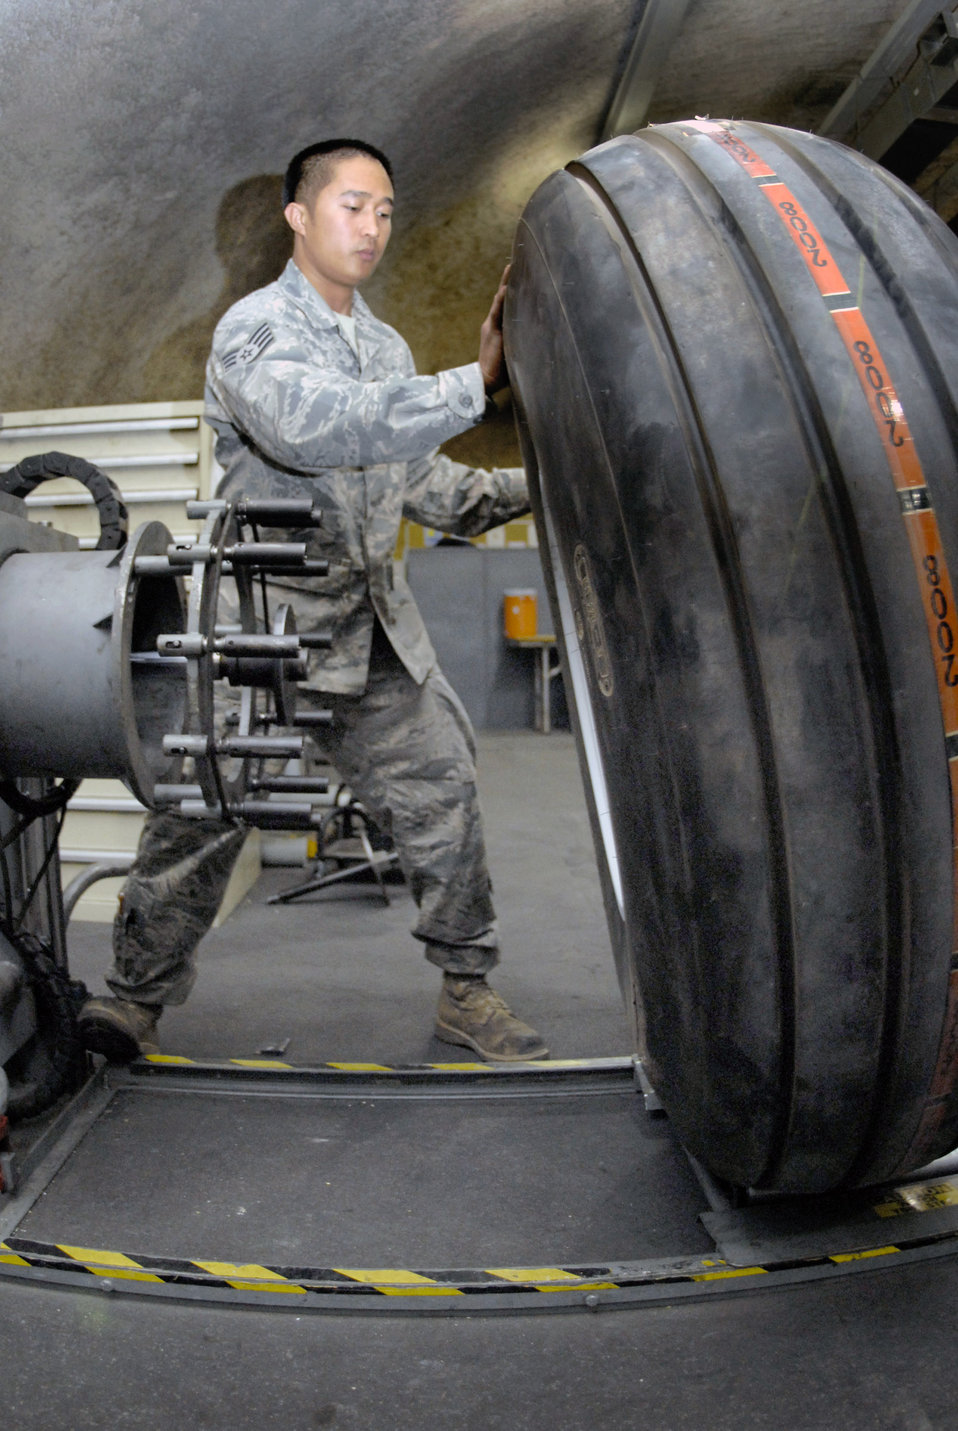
Wheel and tire shop rolls on

Staff Sgt. Ruben Ramones rolls a C-130 Hercules tire to the air filling station April 13 after assembling the main wheel components at an air base in Southwest Asia. Sergeant Ramones hails from Sacramento, Calif., and is deployed from Yokota Air Base, Japan, in support of Operations Iraqi and Enduring Freedom and Combined Joint Task Force - Horn of Africa. He is the wheel and tire shift lead for the 379th Expeditionary Maintenance Squadron.